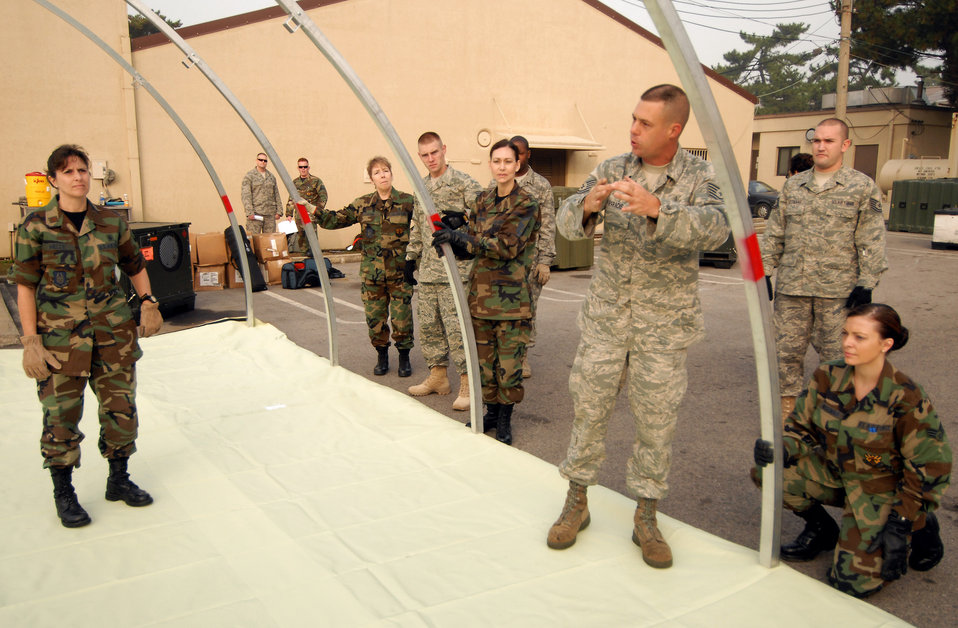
Reserve medics train at Kunsan

Tech. Sgt. Marc Paradis instructs Reserve Airman on constructing a medical staging facility Oct. 21 at Kunsan Air Base, South Korea. The reservists are from from Luke Air Force Base, Ariz., and Westover Air Reserve Base, Mass. Sergeant Paradis is assigned to the 36th Medical Support Squadron from Andersen Air Force Base, Guam.